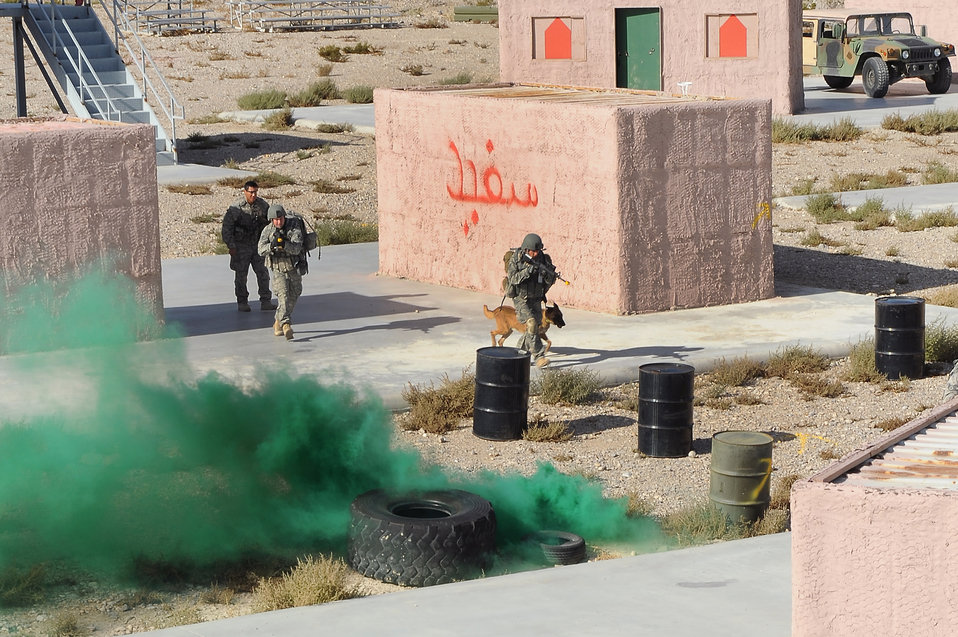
Nellis AFB selected to host new joint MWD training program

Security forces Airmen and their military working dogs cross an open court yard during a training exercise Oct. 29, 2010, at the Nevada Test and Training Range. The training exercise is part of a new Nellis Air Force Base program created to condense the current 80-day training curriculum for handlers and MWDs.